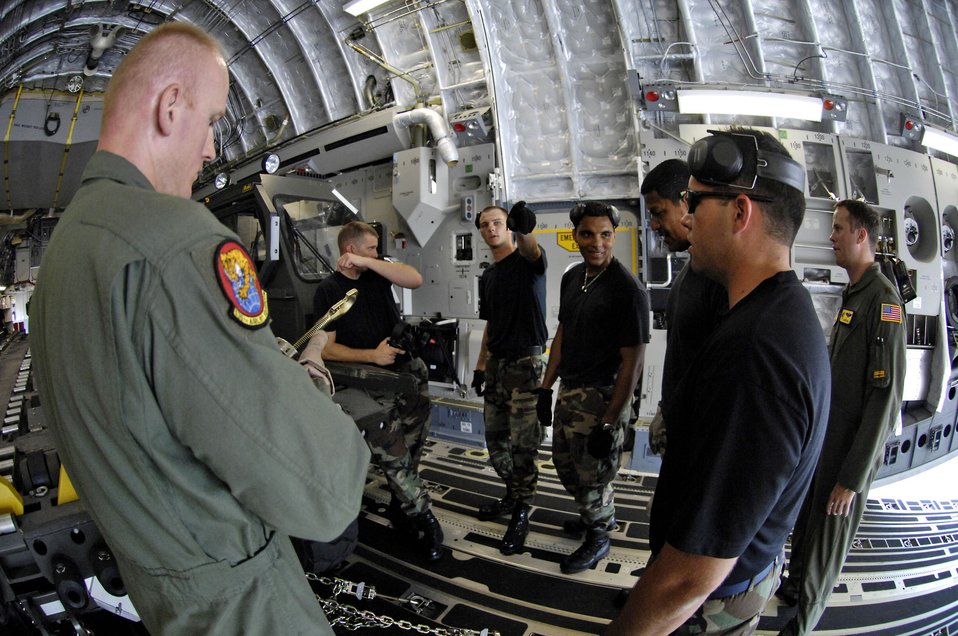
Hickam Rodeo team ready to go

Hickam Air Force Base, Hawaii, Rodeo team members discuss techniques to on load equipment onto a C-17 Globemaster III during Rodeo practice July 13. Members from the 535th Airlift Squadron and 15th Logistics Readiness Squadron Combat Mobility Element are practicing for the upcoming Air Mobility Command Rodeo at McChord AFB, Wash.